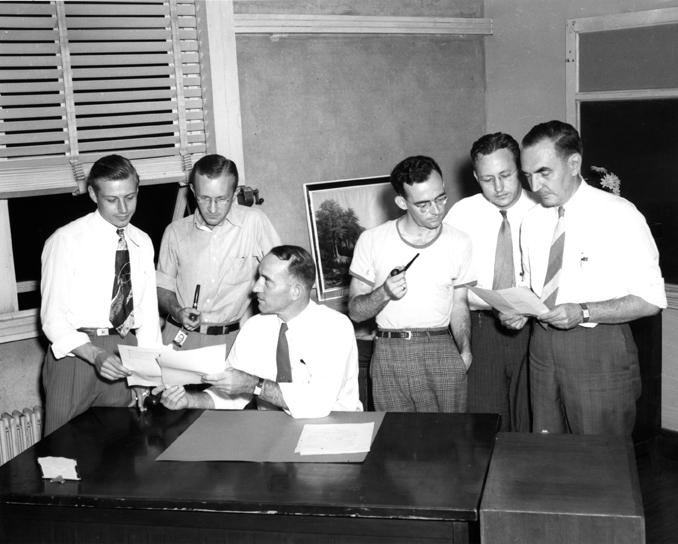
Meeting at Oak Ridge